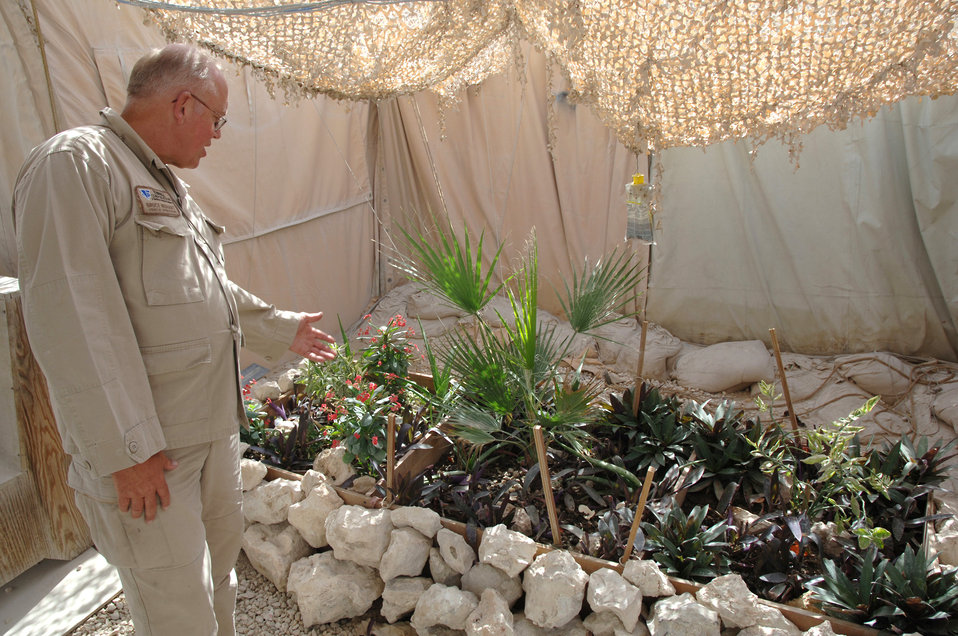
Garden in the desert

Bruce Neihart, a contractor at a deployed location in Southwest Asia checks the growth of his side project -- a mini garden with flowers, herbs, and tomatoes Wednesday, Mar. 8, 2006. He is well known for his tomatoes and other veggies sprouting up here in the desert. Mr. Neihart is with the 379th Expeditionary Logistics Readiness Squadron.